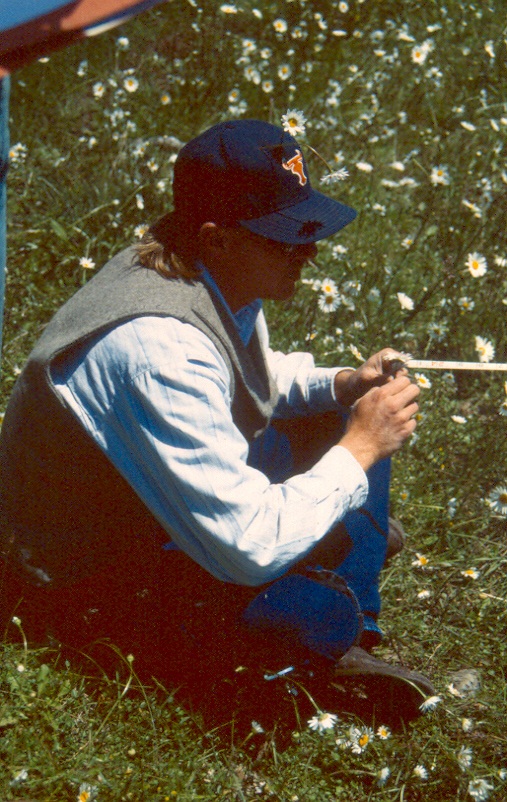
People Salmon Field Office UCSC Upper Columbia Salmon Clearwater District